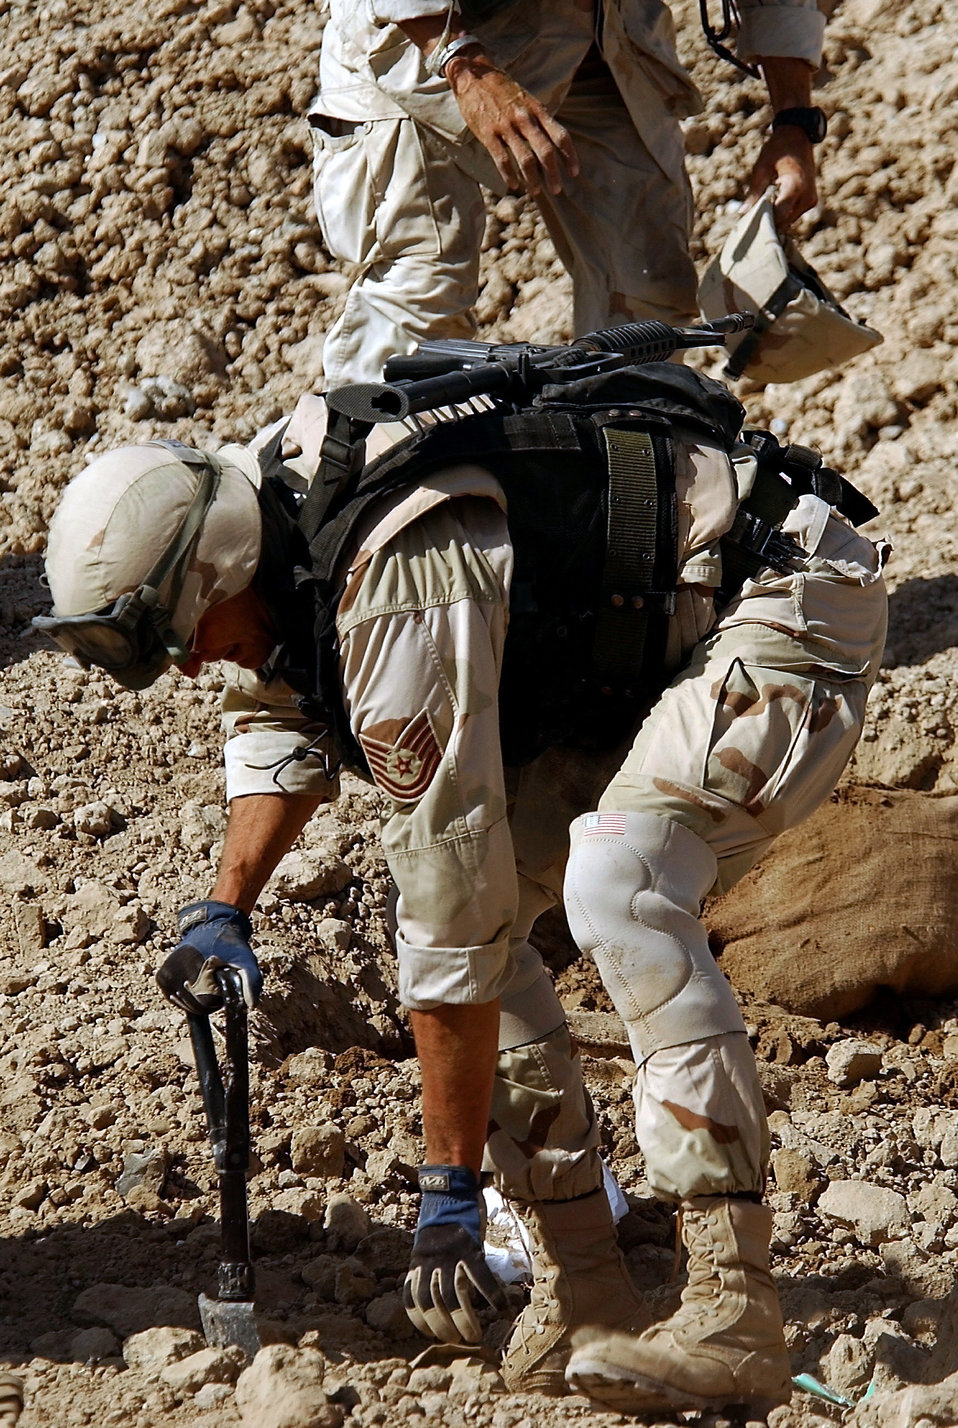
Buried danger

OPERATION IRAQI FREEDOM -- Tech. Sgt. Christopher Sheets digs out mortar rounds buried near an Iraqi school south of An Nasiriyah, Iraq. Sheets and other members of the 407th Explosive Ordnance Disposal Squadron joined members of Marine Wing Support Squadron 371 from Yuma, Ariz., for a sweep that found 305 mortar rounds May 5. The units are deployed to Tallil Air Base in southern Iraq to support Operation Iraqi Freedom.